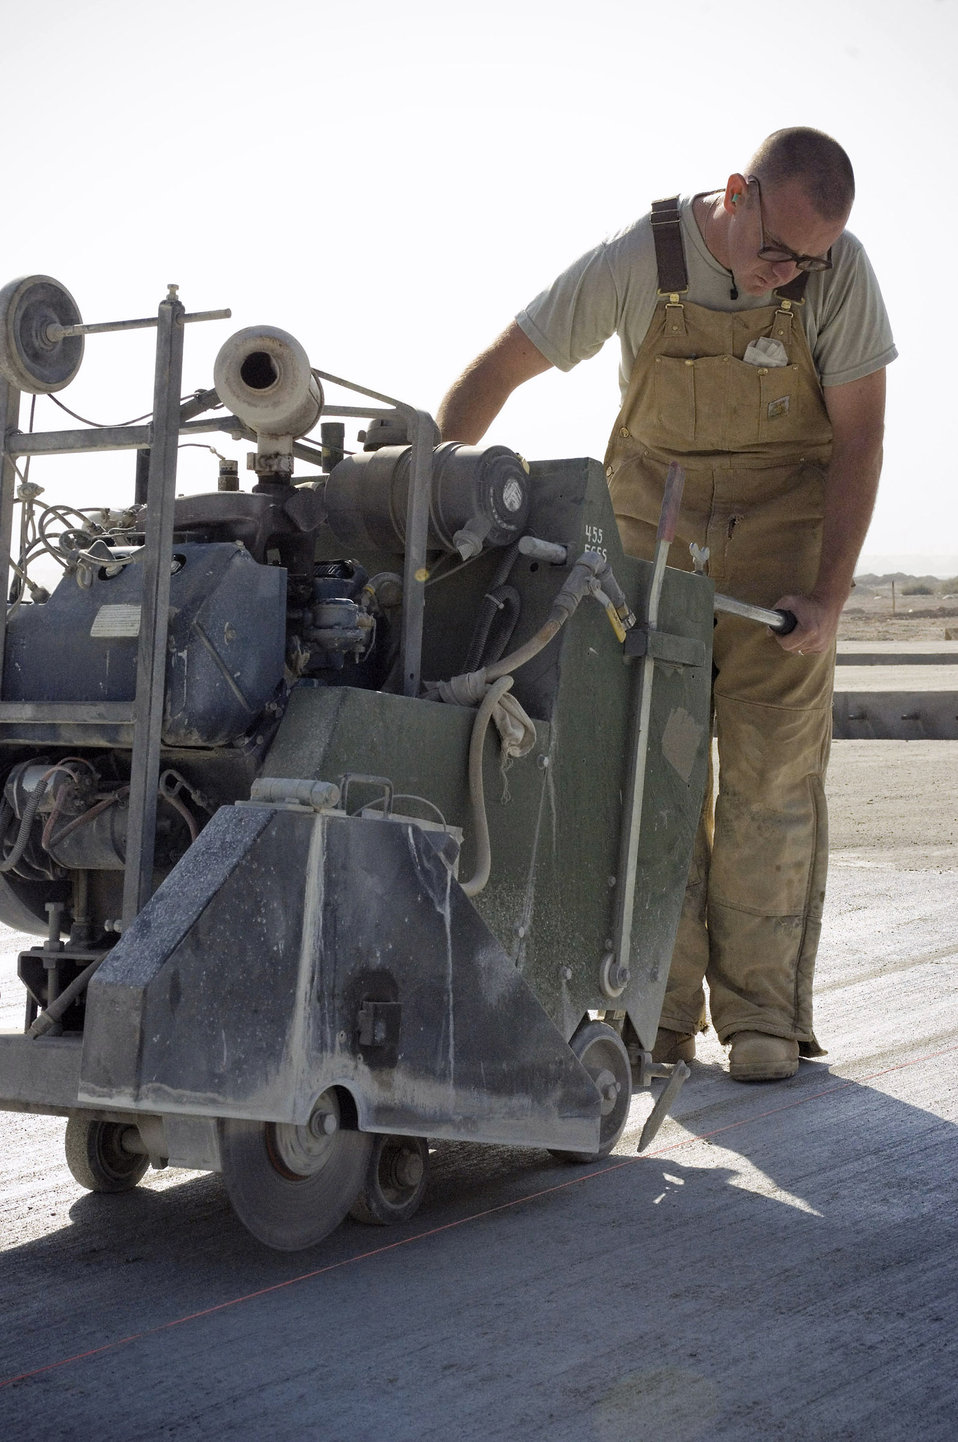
Civil engineer crews improve Bagram infrastructure

Staff Sgt. Michael Warner cuts concrete on one of the many construction sites Nov. 25 at Bagram Airfield, Afghanistan. As newly laid concrete dries, it must be cut to prevent cracking. Sergeant Warner is a structures journeyman with the 455th Expeditionary Civil Engineer Squadron deployed from Barksdale Air Force Base, La.